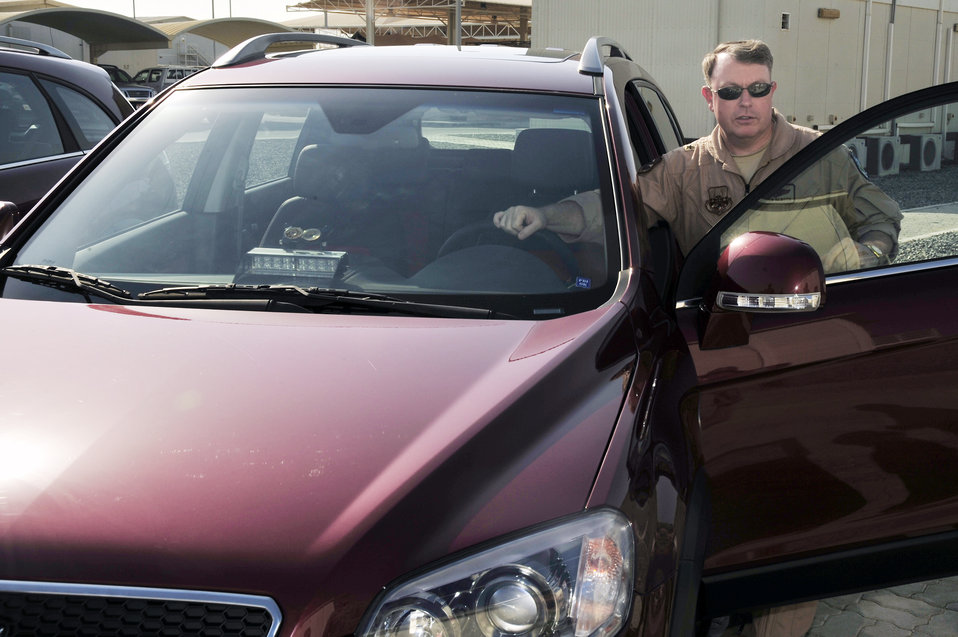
Air Force officials go green, renew vehicle fleet at wing in Southwest Asia

Brig. Gen. Bryan J. Benson prepares to test drive his new staff vehicle Oct. 26, 2009, at an air base in Southwest Asia. General Benson received the new vehicle to comply with new Department of Defense directives. General Benson is the 380th Air Expeditionary Wing commander.